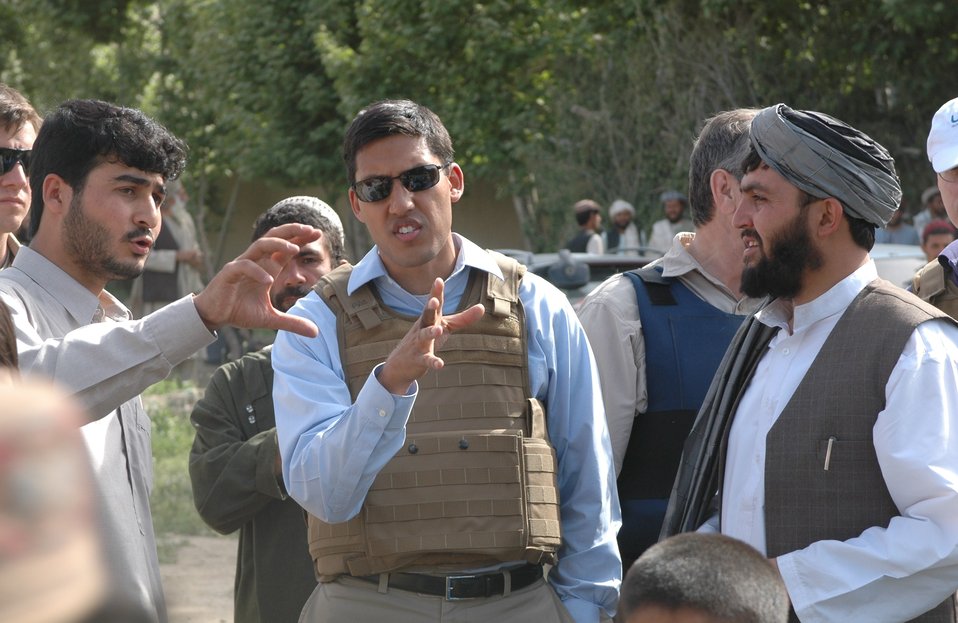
Dr Shah Visits Argandab April 10, 2010